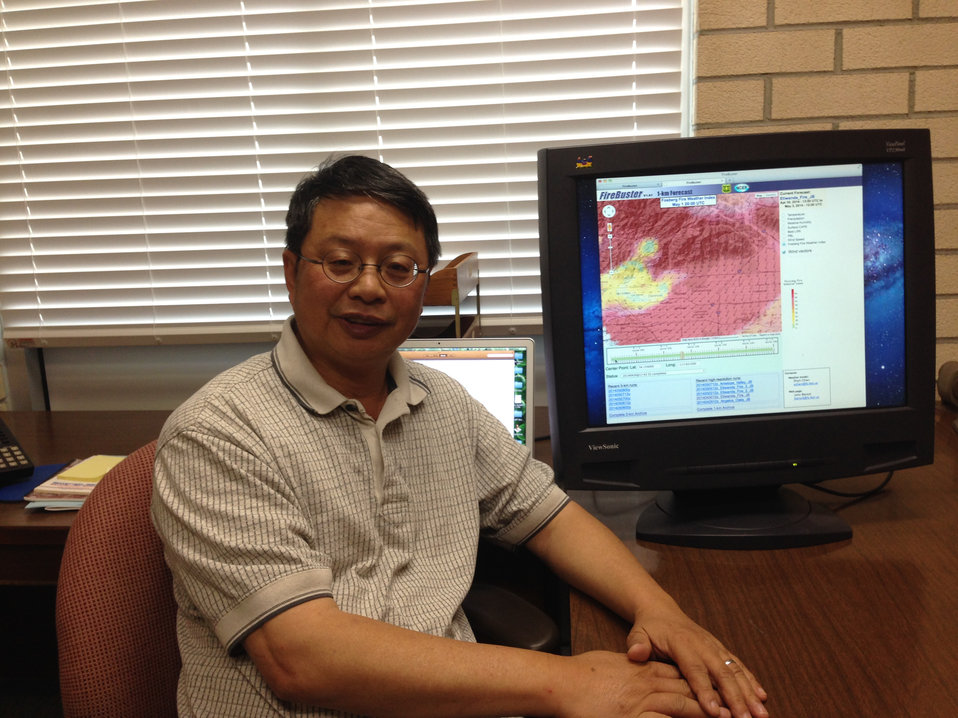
Shyh- Chin Chen blog photo 4

U.S. Department of Agriculture (USDA) U.S. Forest Service (USFS) research meteorologist Shyh-Chin Chen works out of the Pacific Southwest Research Station in California. Having experienced wildland fire literally on his home’s doorstep at least several times during the last decade, he has a passion for developing new weather forecasting tools to help firefighters predict and combat fires more effectively. Here he is shown with the Firebuster web tool.